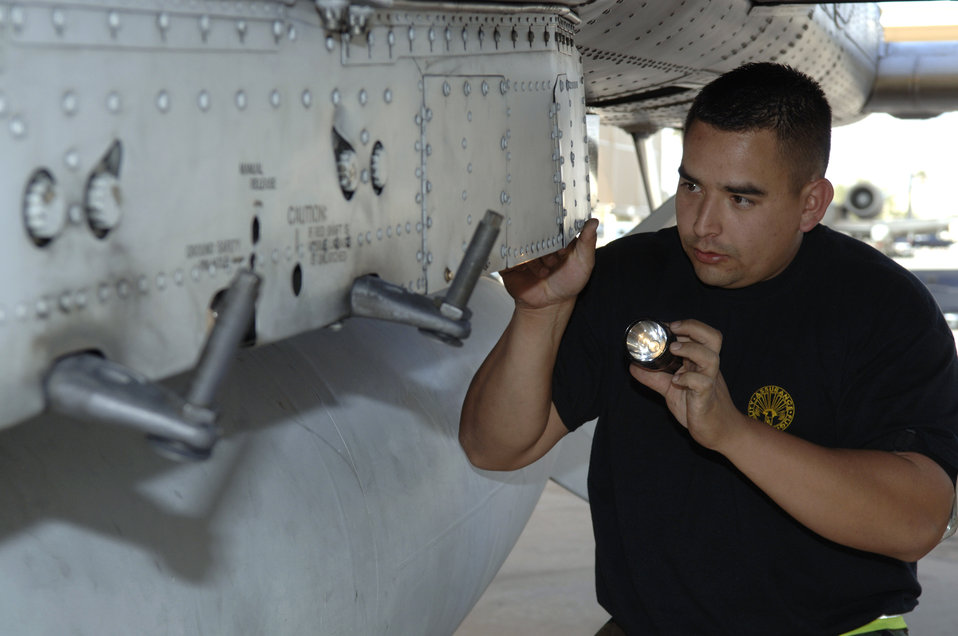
We're ready!

Staff Sgt. Orlando Mendoza performs a maintenance inspection on an A-10 Thunderbolt II Feb. 17 during an operational readiness exercise at Davis-Monthan Air Force Base, Ariz., being conducted by the Air Combat Command inspection team. The ACC inspectors test the ability of 355th Wing Airmen to prepare to deploy and fight when called. Sergeant Sangfield is a weapons team chief assigned to the 355th Maintenance Group.